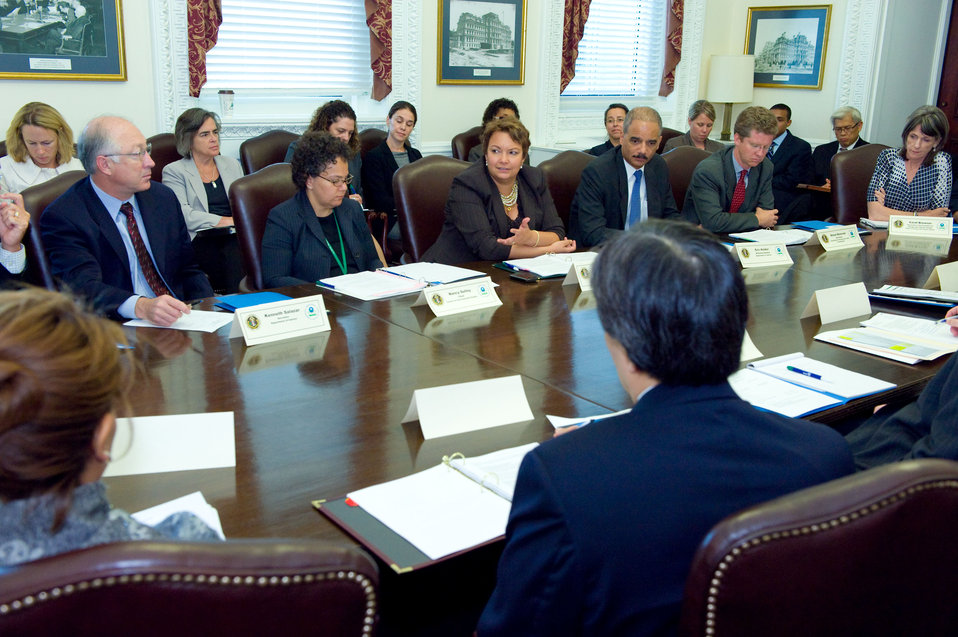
EPA Hosts Historic Meeting on Environmental Justice

Left to right, Kenneth Salazar, Secretary, Department of Interior, Nancy Sutley, Chair, Council on Environmental Quality, Lisa P. Jackson, Administrator, Environmental Protection Agency, Eric Holder, Attorney General, Shaun Donavan, Secretary, Department of Housing and Urban Development, Carol Browner, Assistant to the President for Energy and Climate Change, Office of Energy and Climate Change.

Read more about this historic meeting

Learn more about EPA